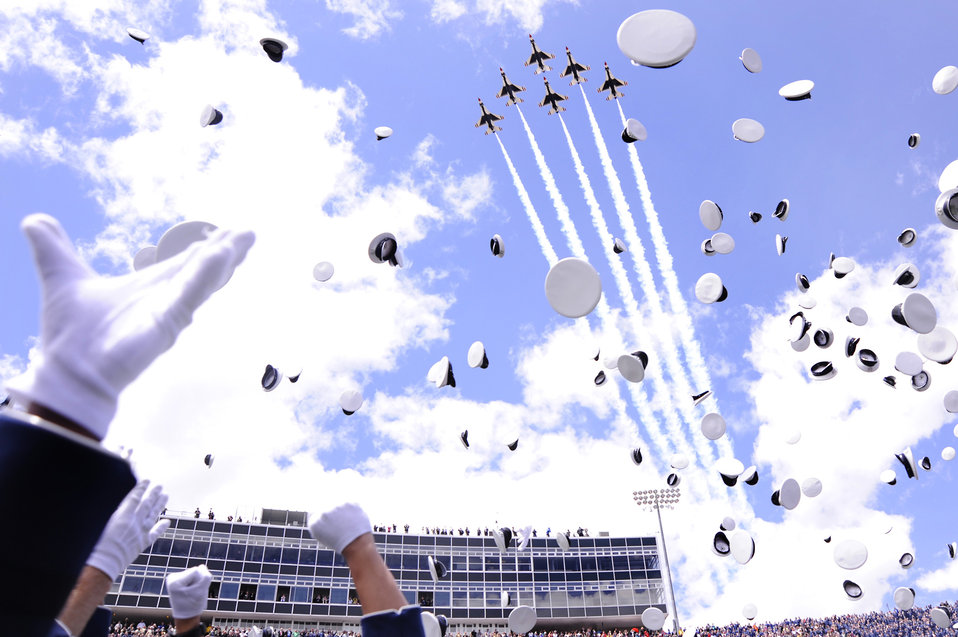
Academy class of 2011

The Air Force Thunderbirds Aerial Demonstration Squadron leads off the hat toss at the end of the Air Force Academy's Class of 2011 graduation ceremony May 25, 2011, at Falcon Stadium in Colorado Springs, Colo.